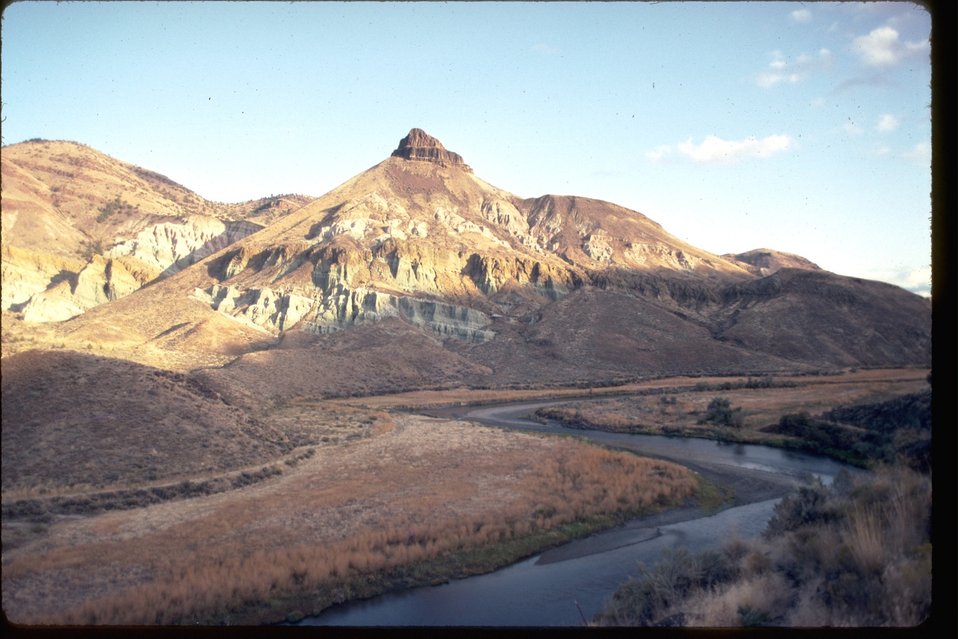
View of Sheep Rock Fossil Beds.